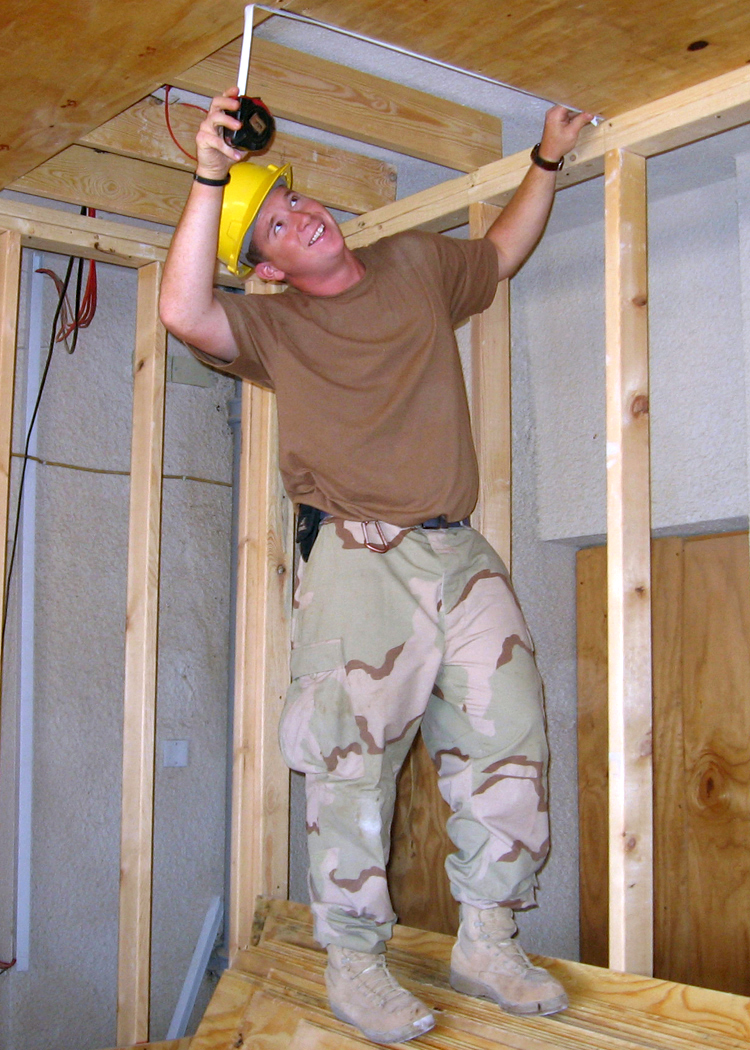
Combat Airmen keep convoy routes open

Airman 1st Class Fred Adams takes measurements for plywood to complete a ceiling for a tactical operations center expansion project at a forward operating base in Iraq on Monday, July 17. Airman Adams is deployed to the 732nd Expeditionary Civil Engineer Squadron's Detachment 10.